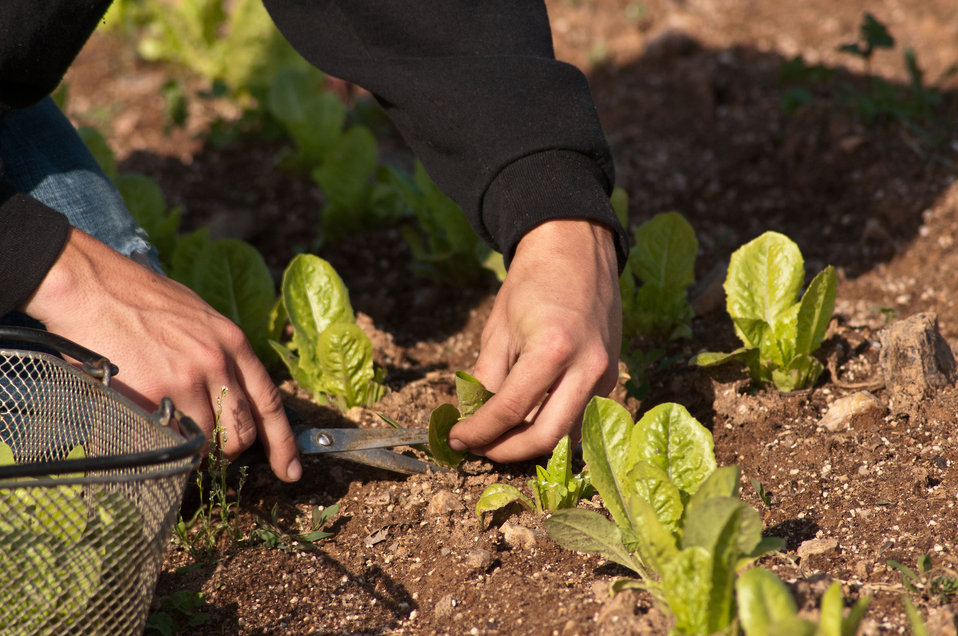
Manakintowne Specialty Growers, a 21-acre farm in Powhatan County, Virginia, on Friday, May 6, 2011. The farm where Jo Pendergraph, her family and team raise specialty produce for chefs and markets of Richmond, Charlottesville and Williamsburg, VA area. This includes the online food hub of Lulus Local Food served by the Fall Line Farms cooperative. This is one of the farms that chefs get those seemingly unique greens such as French Sorrel, Pea Shoots, Frisee, Tat soi, Mizuna, Pink/green radish shoots, Sunflower shoots, Baby red mustard, Tuscan Kale, Beet greens. All harvested by hand and scissors. As well as micro greens such as Pak choi, Tat soi, Mizuna, Purple kohlrabi, Shungiku (edible chrysanthemum), Ruby chard, Purple/Daikon/Triton radish, Red amaranth and Bull's Blood Beet. Edible flowers such as African Blue Basil, Nasturtiums, Johnny Jump Ups, and Chive blossoms Dianthus (pinks) are grown here. The seasonal choices are listed by suppliers and ordered by members on Lulus Local Food website, the food is distributed to pick-up points in the Richmond, VA area. They also offer a wide variety of household food staples and specialty fruits, vegetables, meats, soaps, eggs, cheeses, flowers, honey, pastas, sauces, syrups, baked goods, mushrooms, flour and grains from and for the Richmond. VA area.